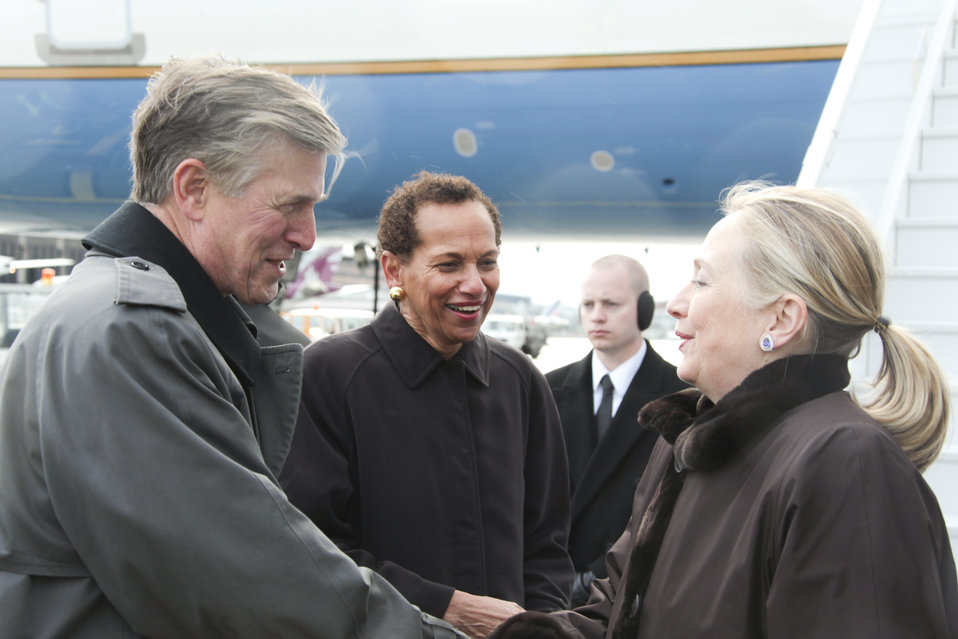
Secretary Clinton Is Welcomed By Ambassadors Beyer and King

U.S. Secretary of State Hillary Rodham Clinton is welcomed by U.S. Ambassador to Switzerland Donald S. Beyer Jr., left; and U.S. Ambassador to the United Nations in Geneva Betty E. King, center; to Geneva, Switzerland, on December 6, 2011.